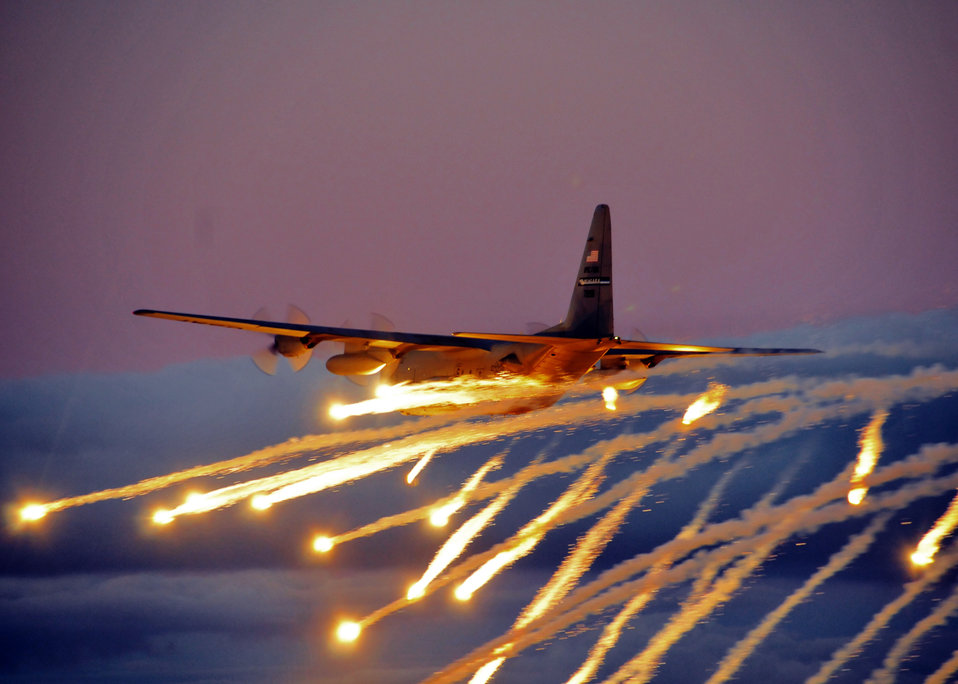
It's raining flares

A C-130 Hercules from the Niagara Falls Air Reserve Station launches flares over Lake Ontario during a training exercise Aug. 10, 2011, in Niagara Falls, N.Y. Flares can be launched from an aircraft as a defensive measure against hostile forces.